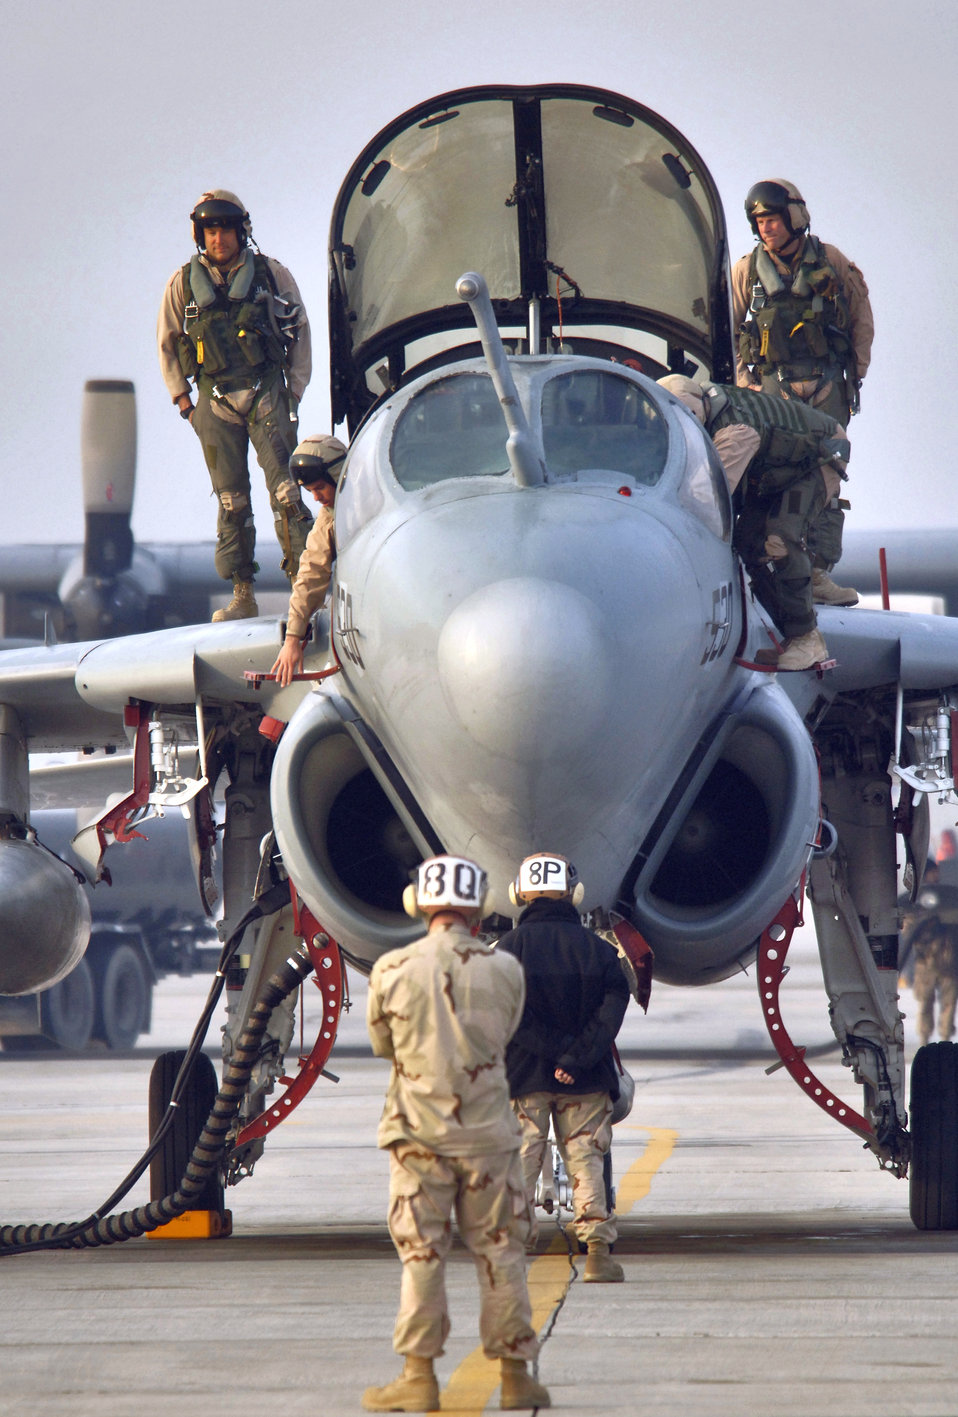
Sunrise sortie

An EA-6B Prowler from Naval Air Station Whidbey Island, Wash., is prepared for launch Wednesday, March 8, 2006, for a sortie from its deployed location at Bagram Air Base, Afghanistan. The squadron's mission is to dominate the enemy's electromagnetic spectrum through precise, lethal application of electronic attack.